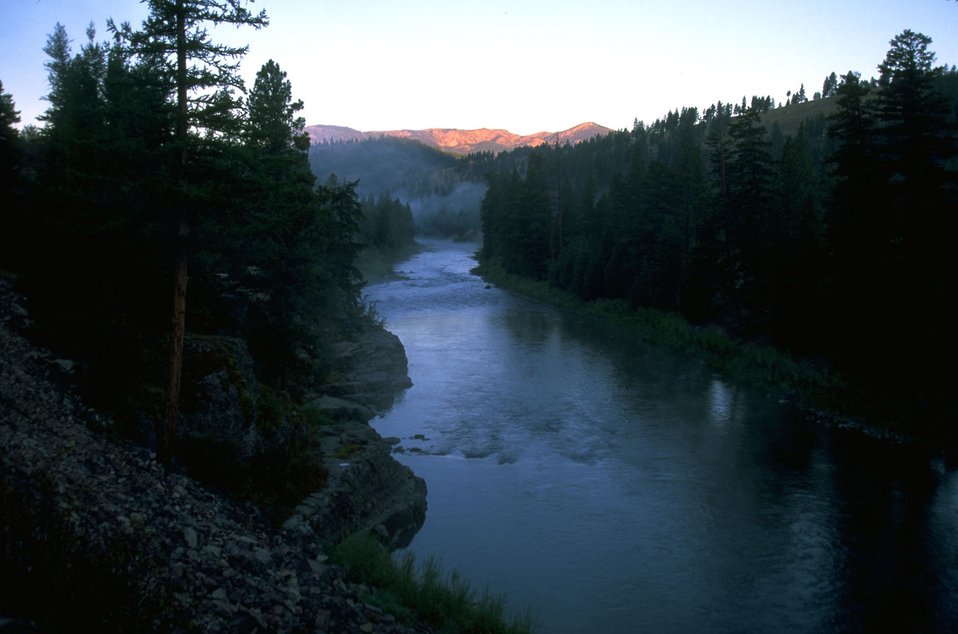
Dawn on the Blackfoot River